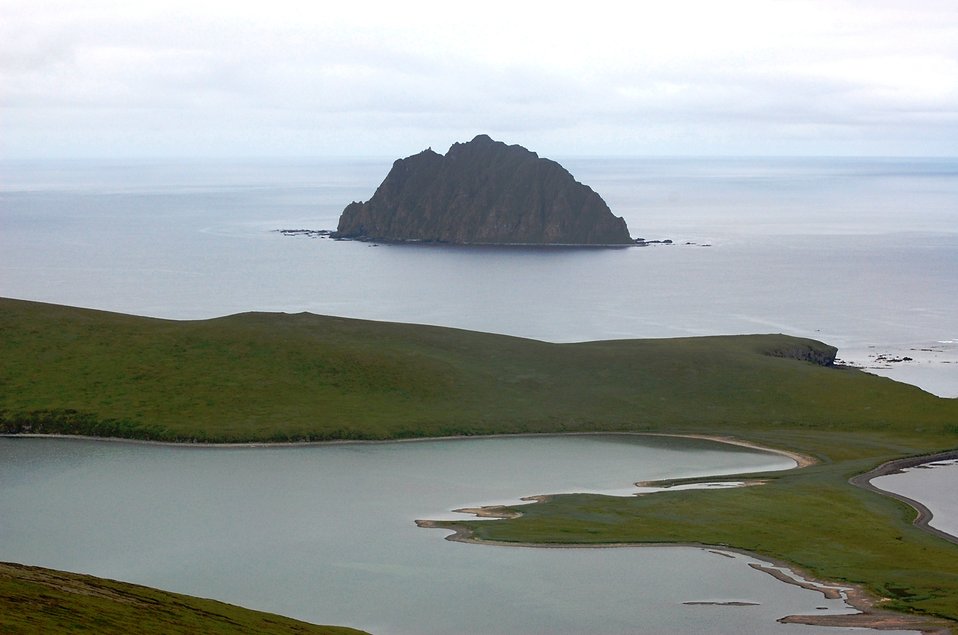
Unimak Landscapes

SE Unimak Island, Alaska Maritime National Wildlife Refuge